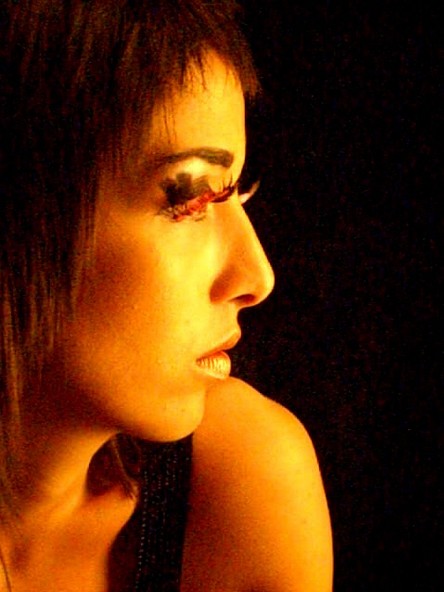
Camille Davila, Leucadia, CA 2006 (This image was uploaded by the photographer.)